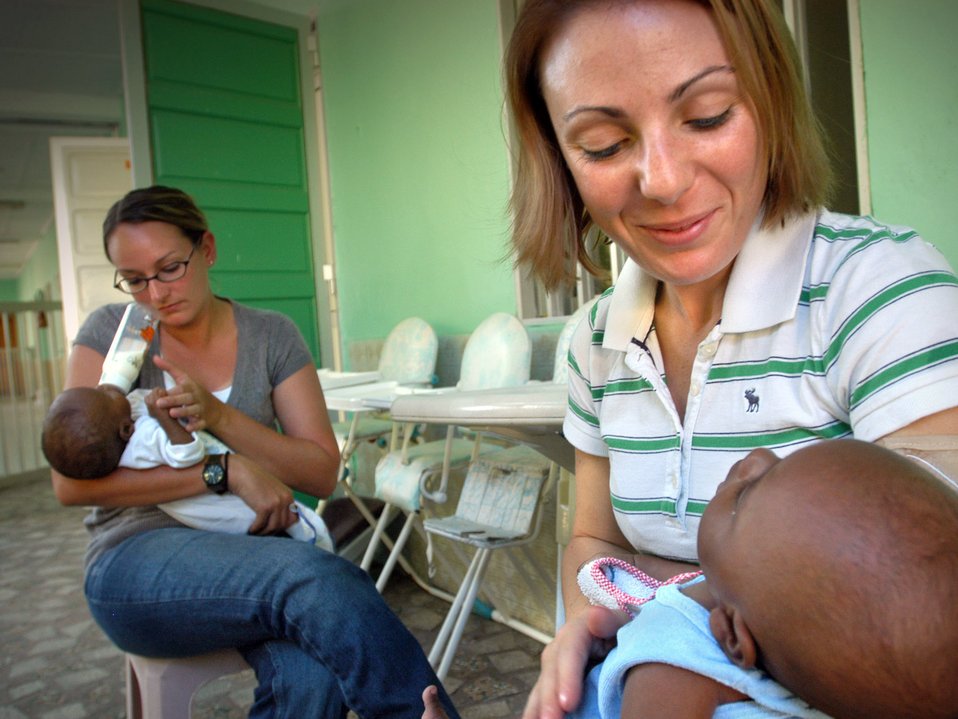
Djibouti baby orphanage

Staff Sgt. Anne O'Neill, right, and Senior Airman Sarah Stegman hold orphaned babies Nov. 28 at a baby orphanage in Djibouti City, Djibouti. The Airmen and other members from Combined Joint Task Force-Horn of Africa visit the orphanage three times a week to assist in feeding and playing with the children.